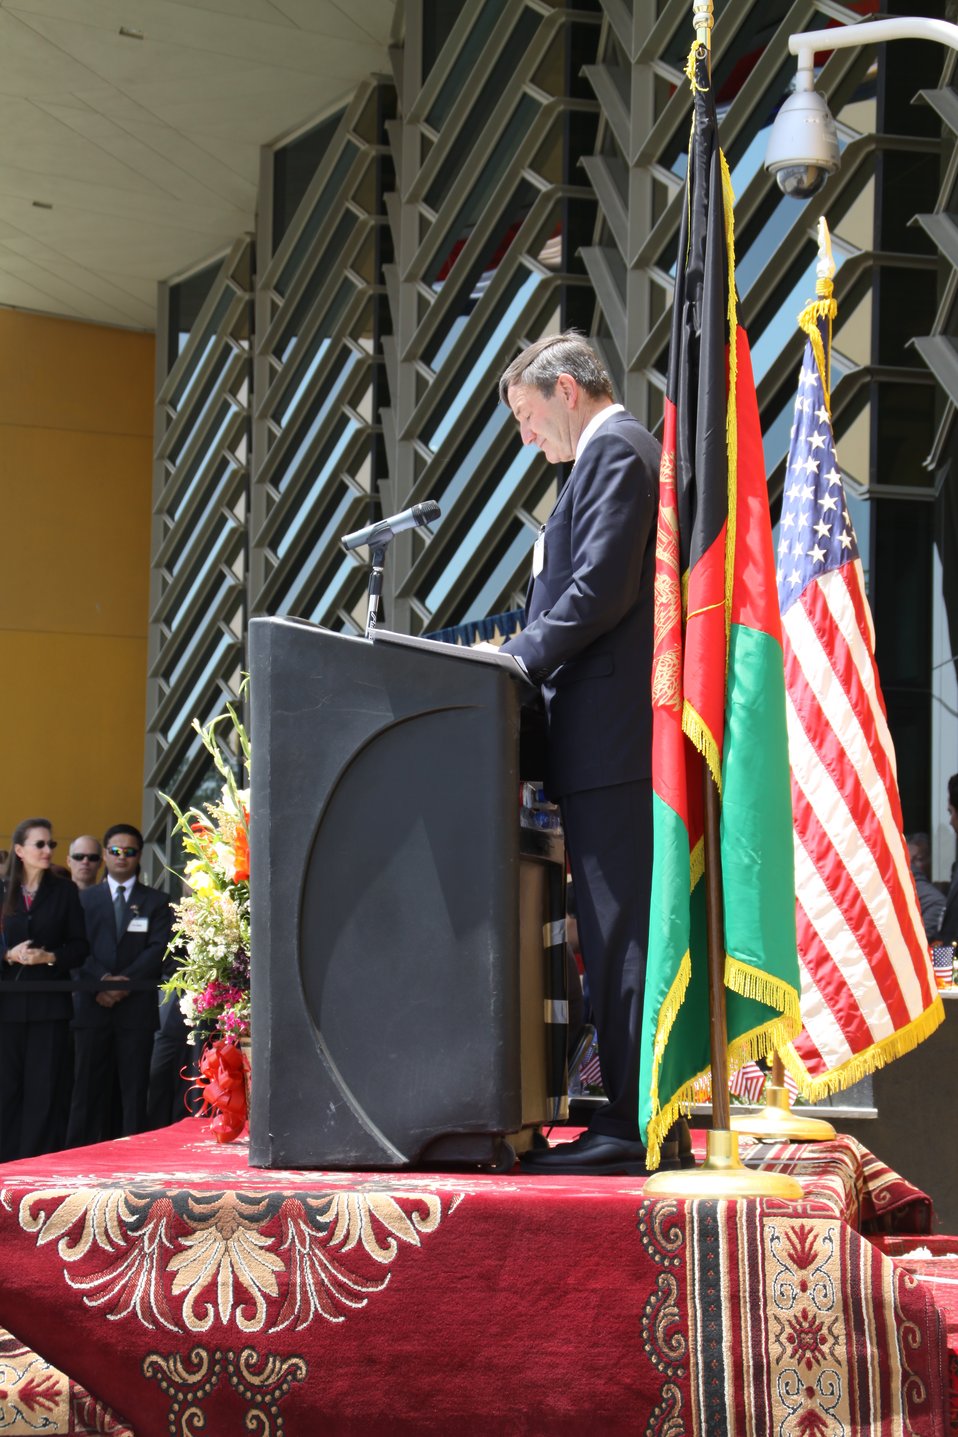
Kabul Official July 4th Celebration